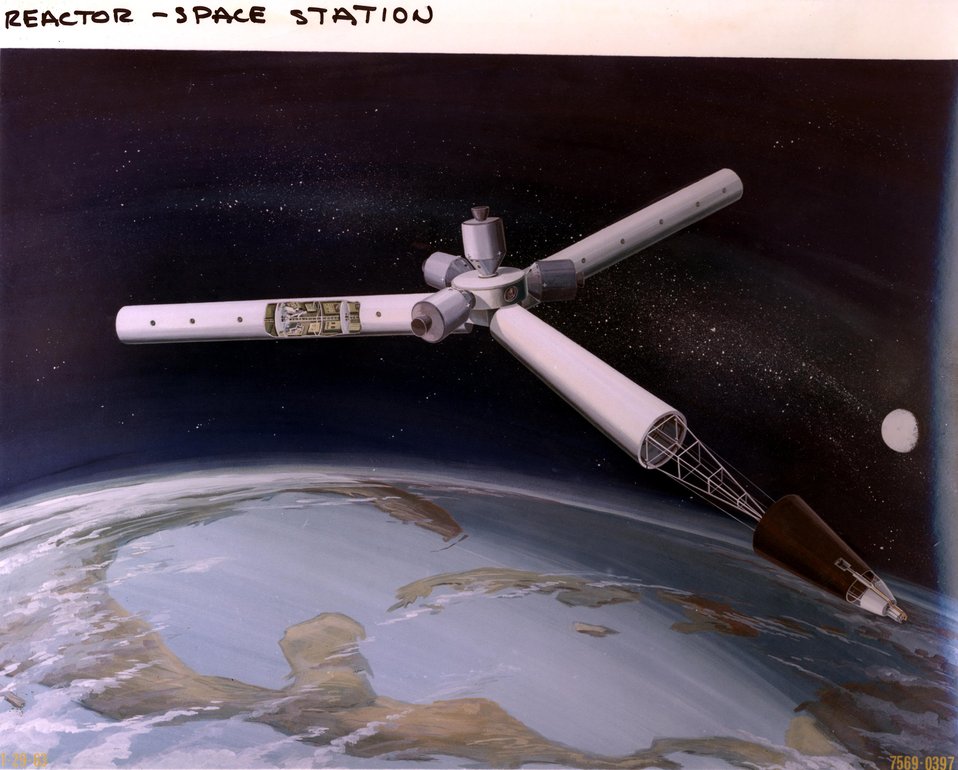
Reactor-Space station